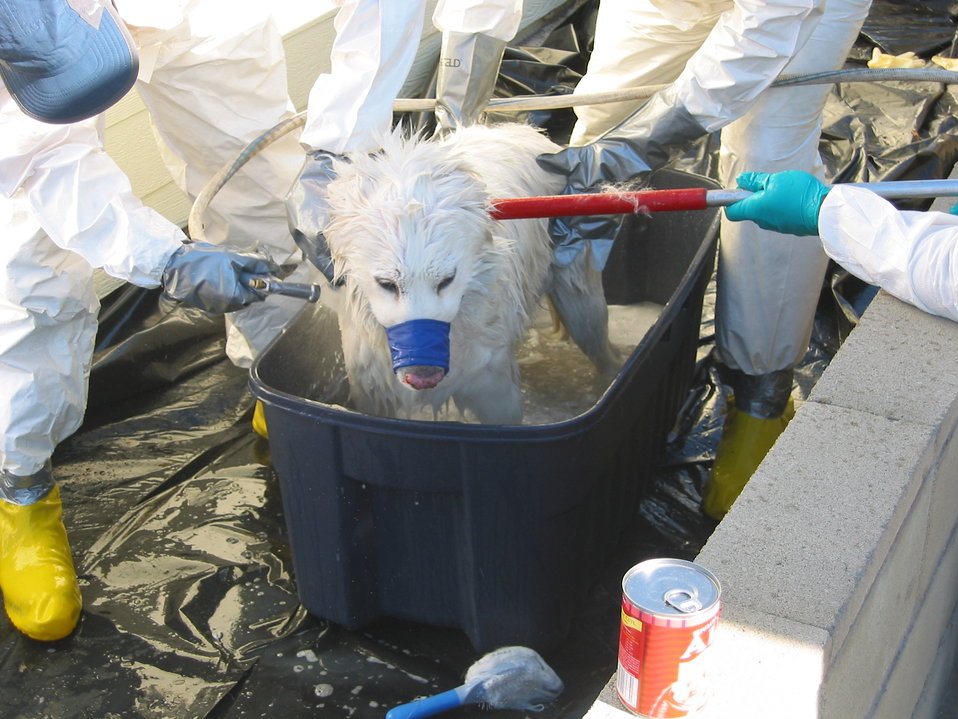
Workers clean Snowball, a dog exposed to mercury

EPA Superfund Emergency Response contractors decontaminate the dog, Snowball, to remove any mercury that might be hidden in his fur. Snowball belonged to a Nevada teen who spread mercury in his home and unwittingly poisoned himself. Snowball recovered and was adopted by a vet. Health effects and symptoms from exposure to mercury include: tremors, emotional changes, insomnia, neuromuscular changes, headaches, disturbances in sensations, changes in nerve responses, performance deficits on tests of cognitive function. At higher exposures there may be kidney effects, respiratory failure and death.